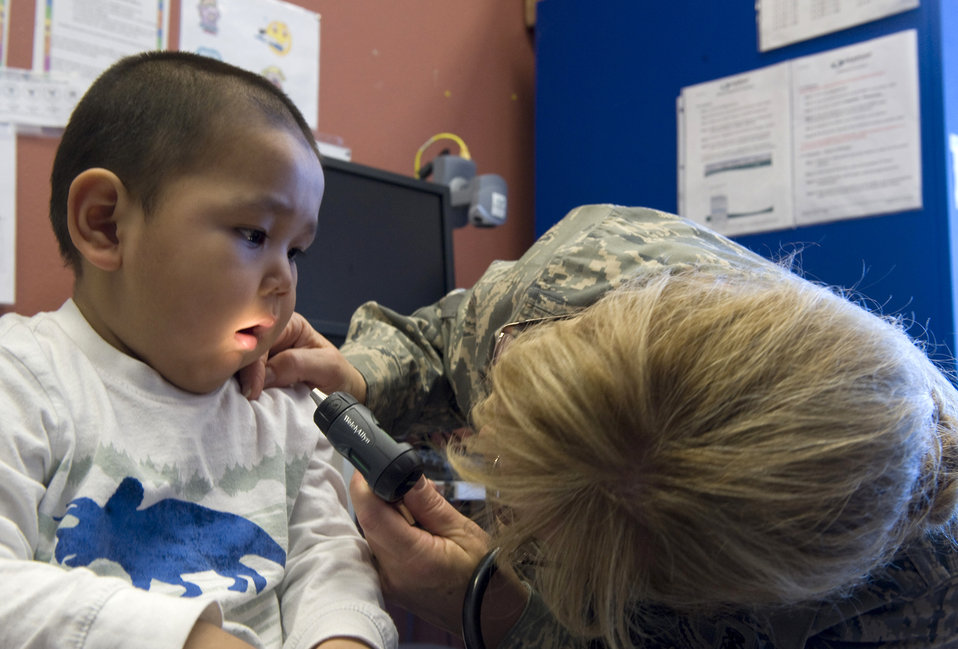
Operation Arctic Care

Maj. Emily Cerreta checks the teeth and gums of 23-month-old Hikerr Snyder during his well-baby checkup April 14, 2010, in Noorvik, Alaska. Major Cerreta is a family nurse practitioner from the 433rd Airlift Wing at Lackland Air Force Base, Texas, and is in Alaska for Operation Arctic Care, a joint medical training exercise.